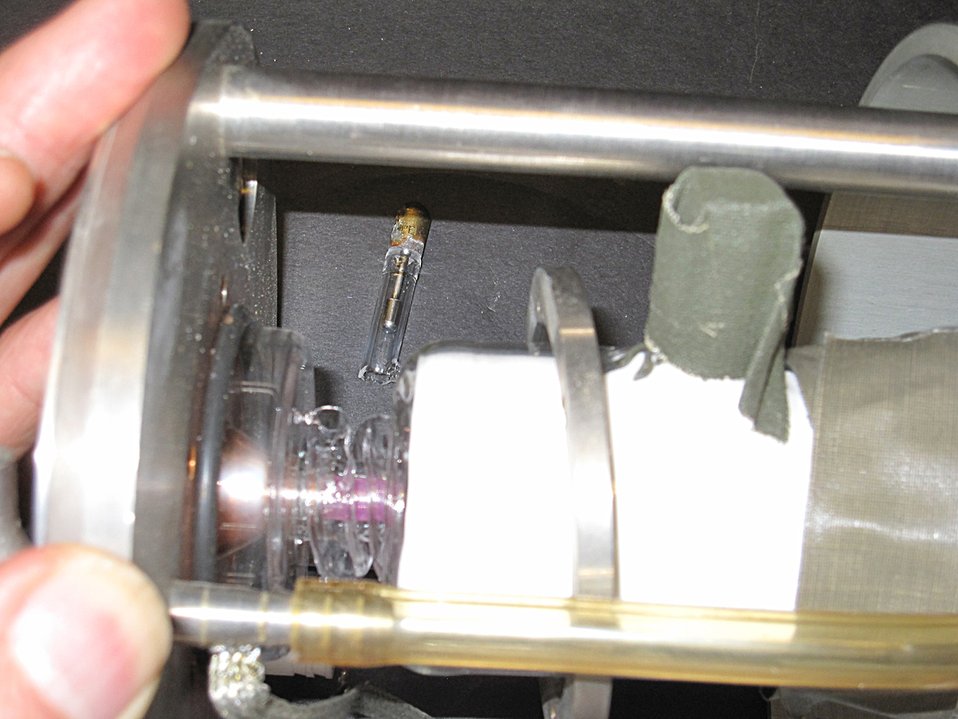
Ruby Laser

1963 ruby laser with ruby rod encased in xenon lamp.